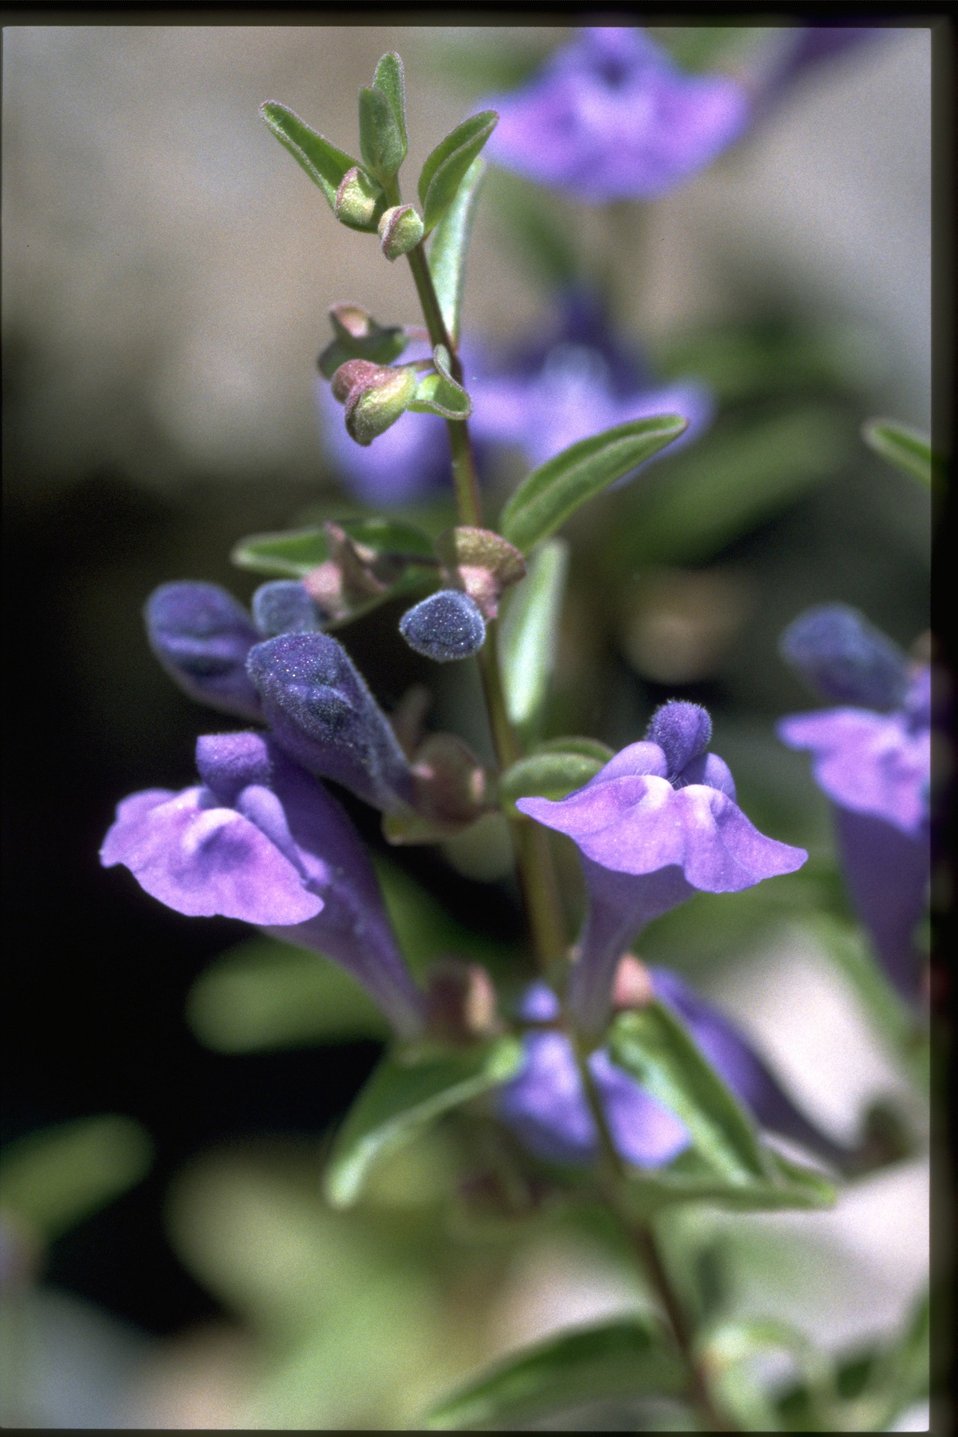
Closeup shot of Narrowleaf skullcap (Scutellaria angustifolia).